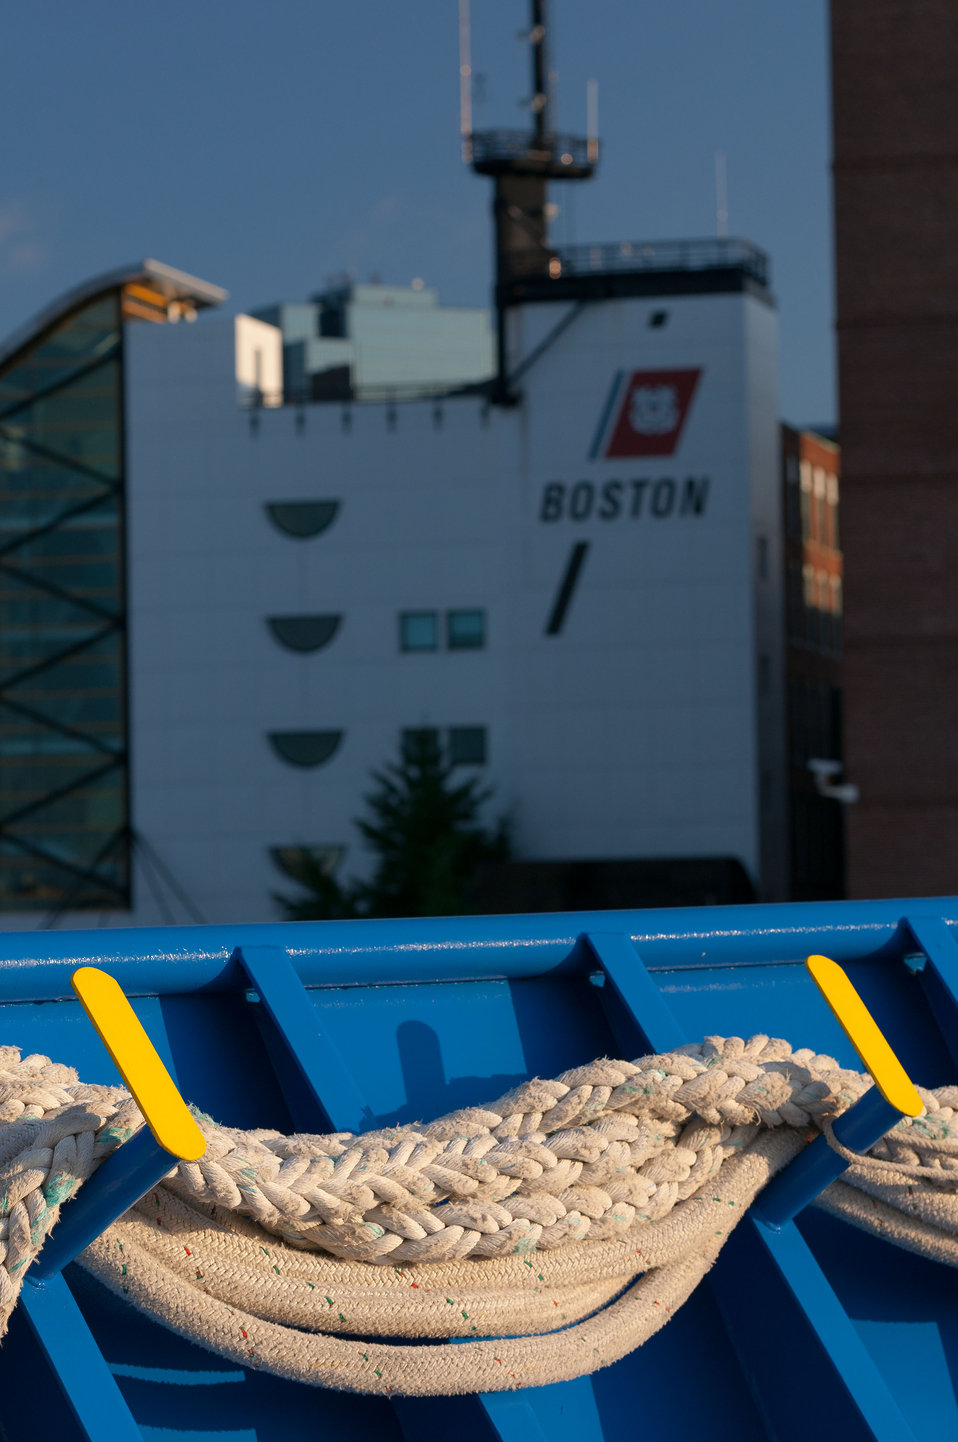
August 4, 2011, docked and waiting at the USCG station in Boston, MA